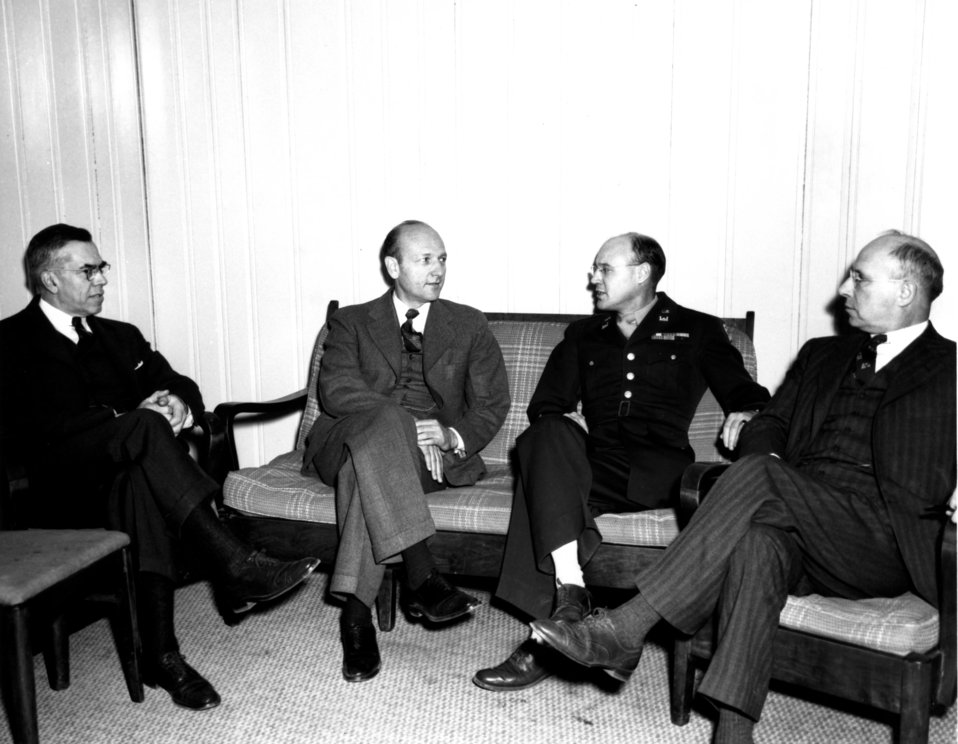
Notable persons at Oak Ridge